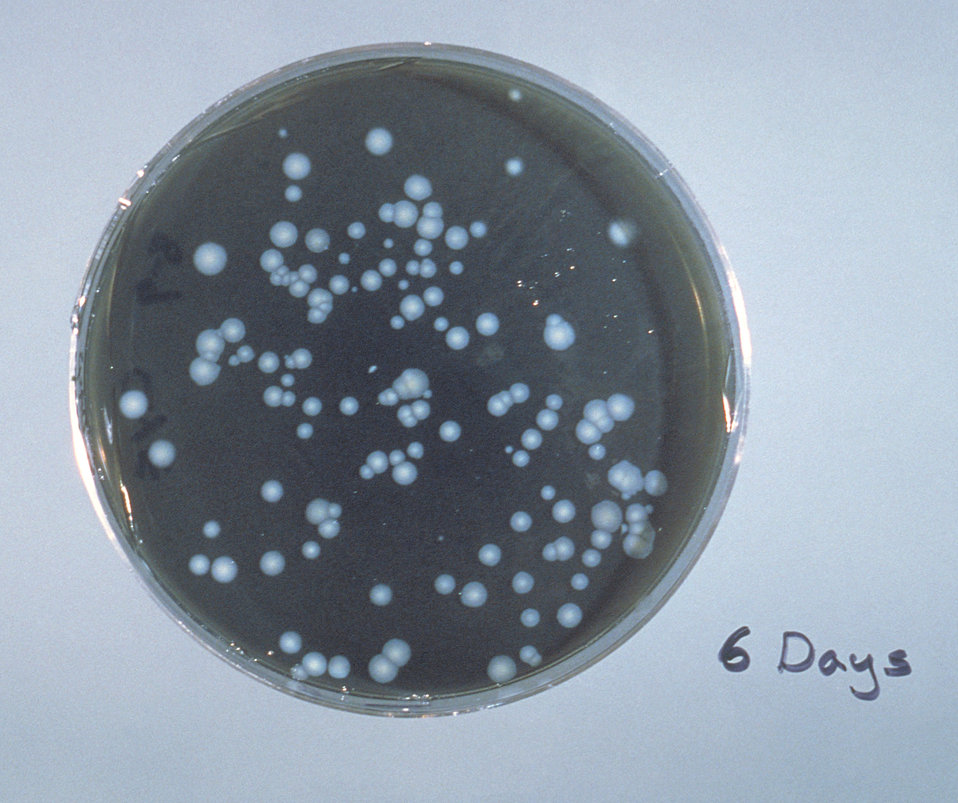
Charcoal-Yeast extract agar plate culture of Legionella pneumophilia.